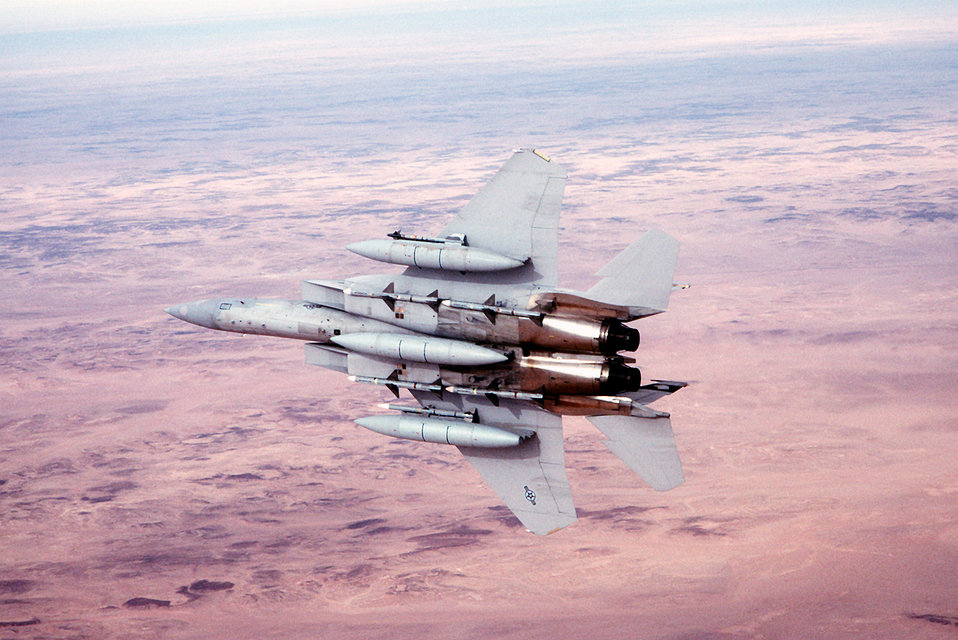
F-15 Eagle

1990's -- A 58th Tactical Fighter Squadron F-15 Eagle aircraft banks to the right following refueling during Operation Desert Storm. The aircraft is armed with four AIM-7 Sparrow missiles on the fuselage, an AIM-9 Sidewinder missile on the left wing and an AIM-120 advanced medium range air-to-air missile on the right wing.